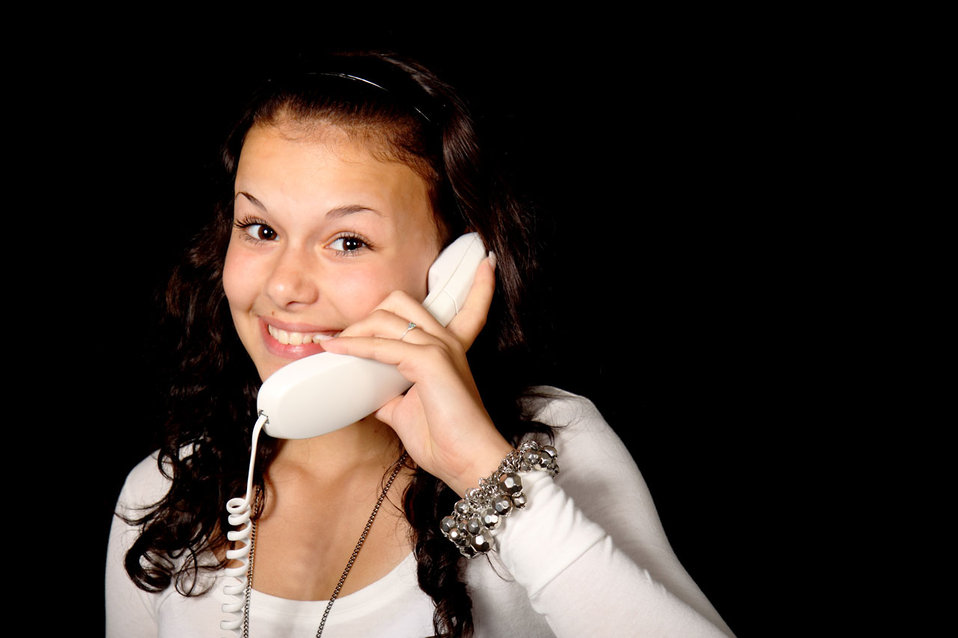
Call me

Young woman with telephone smiling.